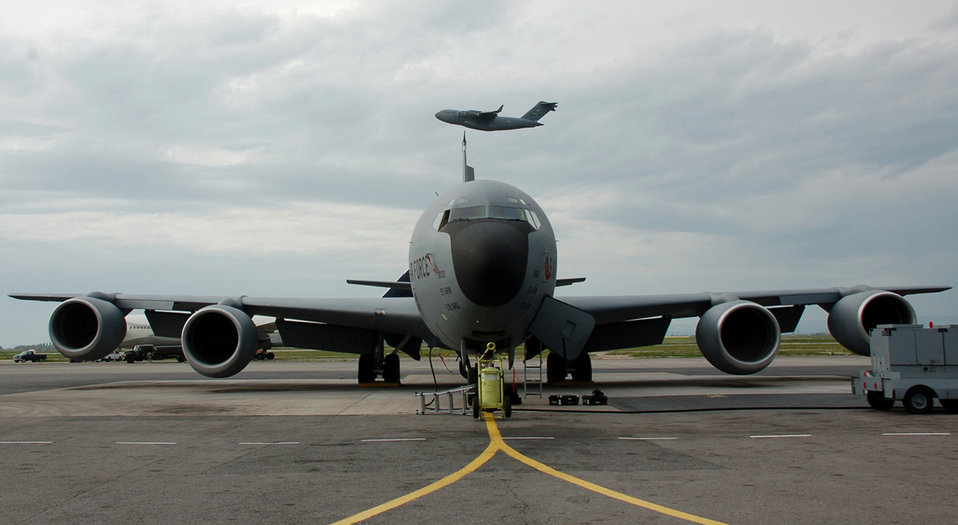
Time to go

While a KC-135 Stratotanker waits for the next mission, a C-17 Globemaster III takes off May 2 with a load of coalition people and cargo at Manas Air Base, Kyrgyzstan. The KC-135 fleet here flies daily aerial refueling sorties to sustain U.S. and coalition planes over Afghanistan.